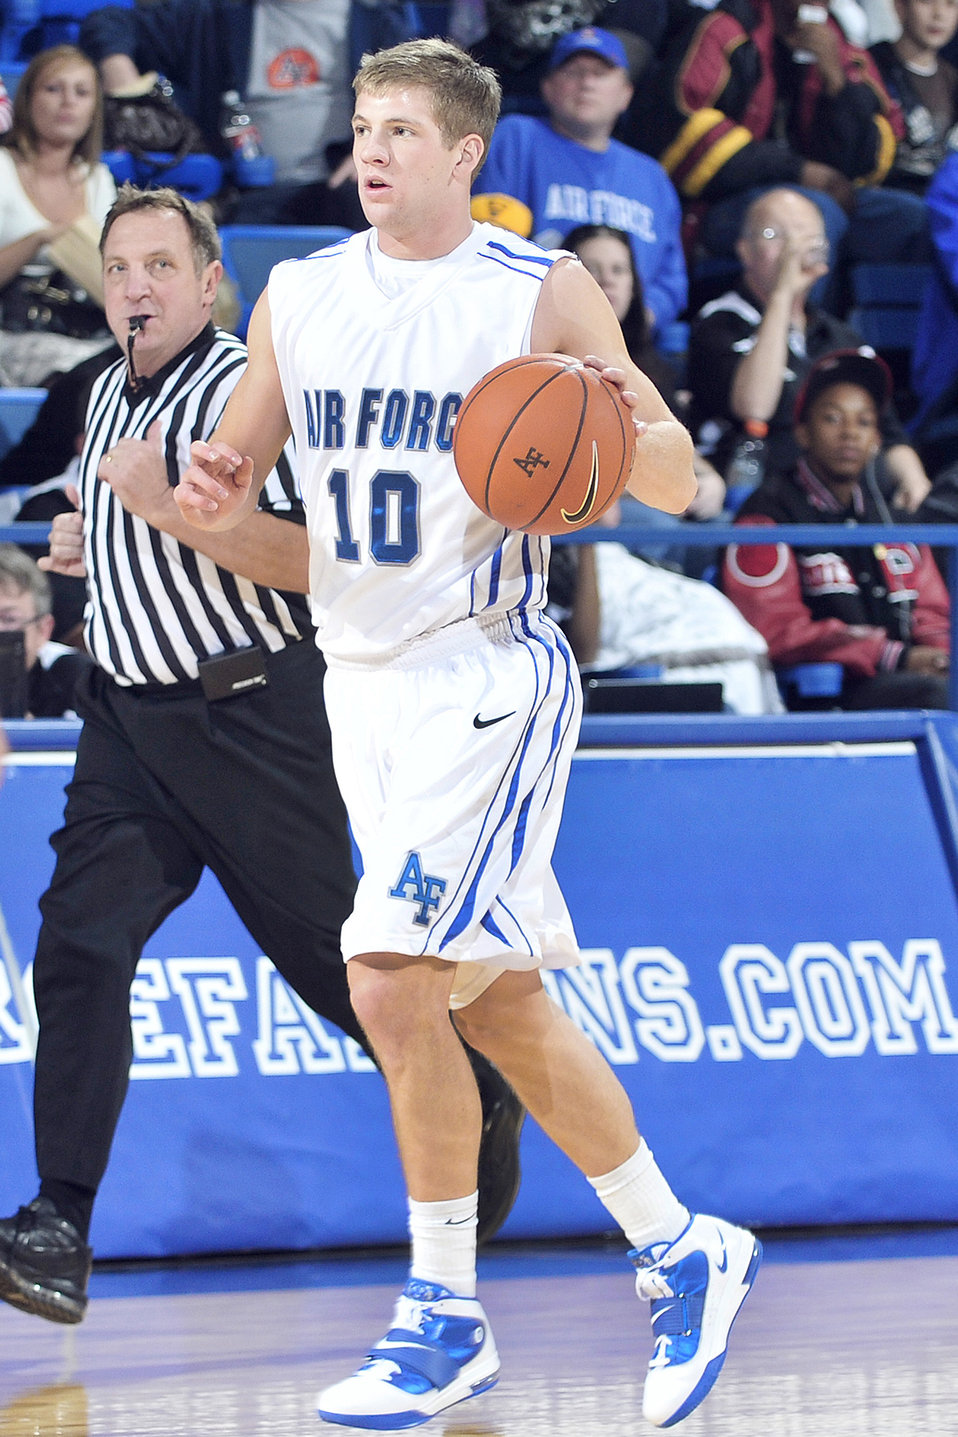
Falcons vs UCCS

Air Force sophomore guard Todd Fletcher goes up court during the Falcons home opener against the University of Colorado at Colorado Springs Nov.14, 2010, at the U.S. Air Force Academy's Clune Arena in Colorado Springs, Colo. The Falcons defeated UCCS 66-53 behind a balanced offensive attack.